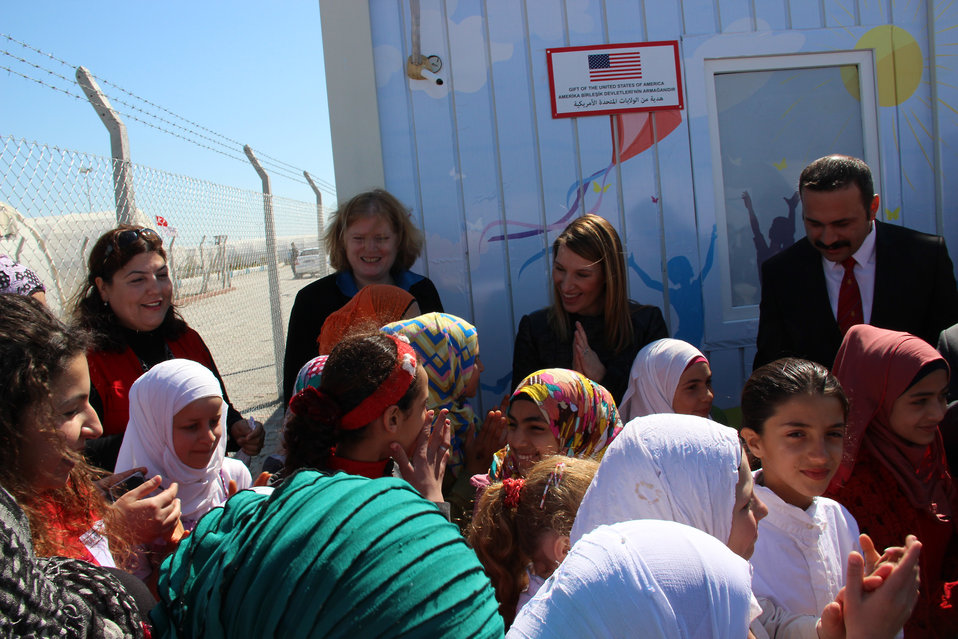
Deputy Secretary Higginbottom and Assistant Secretary Richard Spend Time With Syrian Refugee Children

Deputy Secretary of State for Management and Resources Heather Higginbottom and Assistant Secretary of State for Population, Refugees, and Migration Anne Richard speak with Syrian refugee children at the Syrian Refugee Camp outside of Adana, Turkey, on March 21, 2014.